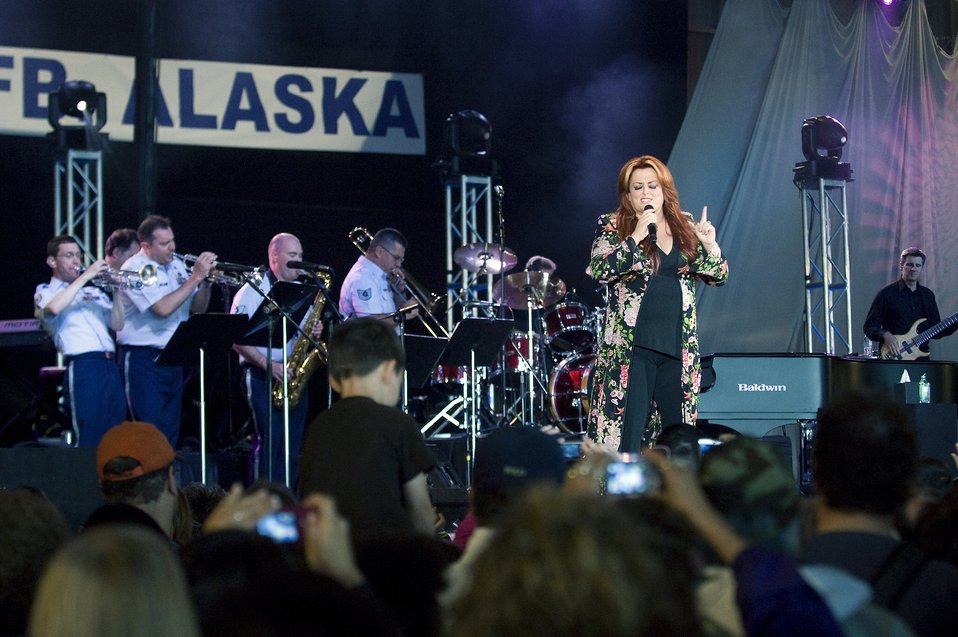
Wynonna headlines concert for military

Wynonna Judd performs with the U.S. Air Force Band of the Pacific for a military and Alaskan crowd at the Alaska's Operation Gratitude concert June 27 at Elemendorf Air Force Base, Alaska. The concert was the official kick off to the